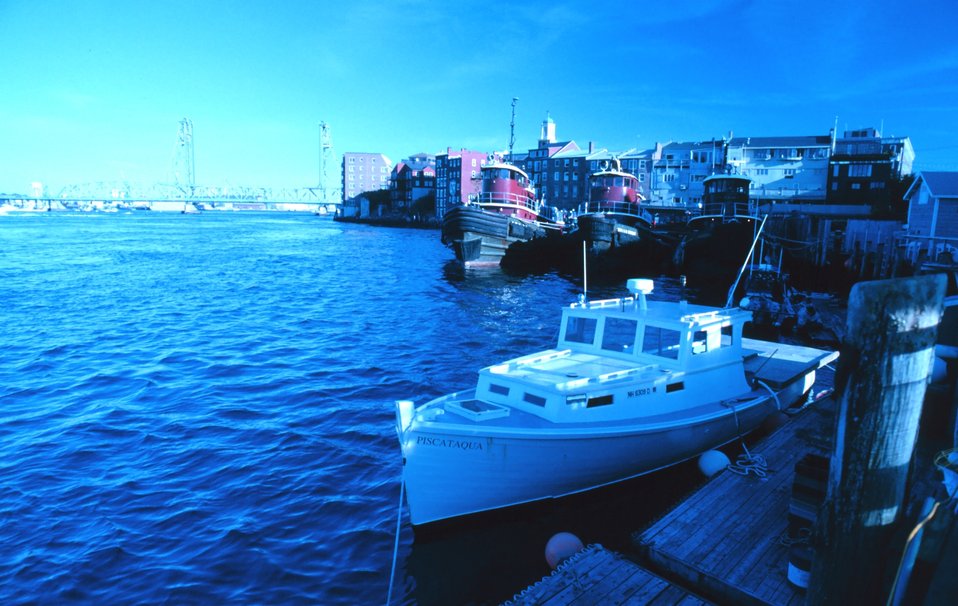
Portsmouth Harbor..